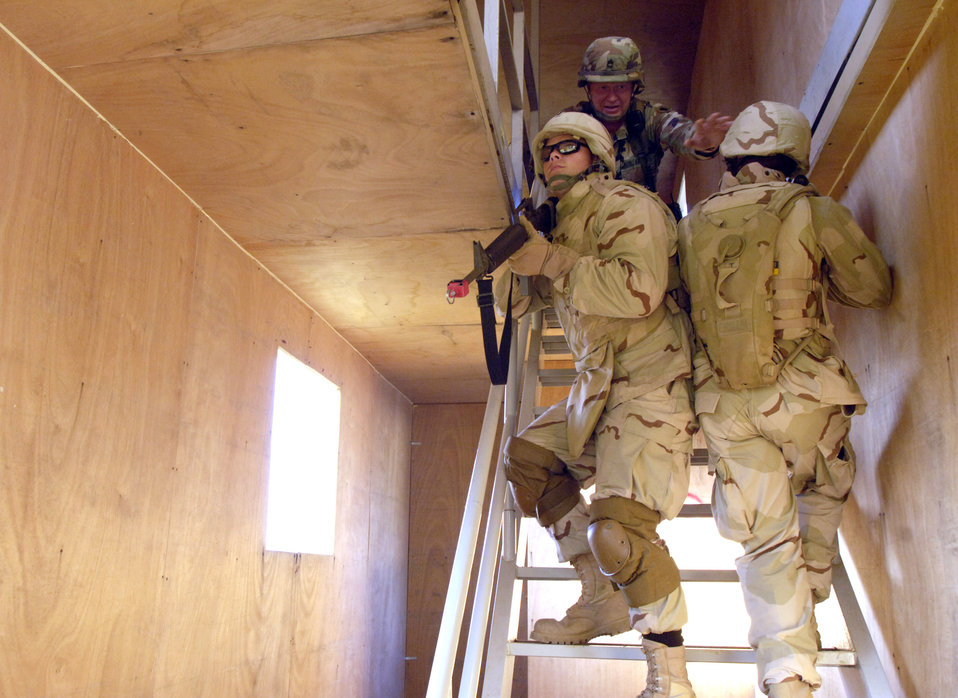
Air Force trains to fill Army deployments

Army Sgt. 1st Class Daniel Criddle (top) instructs 1st Lt. Steven Maddox (left) and Staff Sgt. Travis Haywood on the importance of synchronizing movements when clearing a stairwell Sept. 2 during a course on urban warfare at Camp Shelby, Miss. Camp Shelby is one of several Army installations providing training to military personnel preparing to deploy to Southwest Asia.